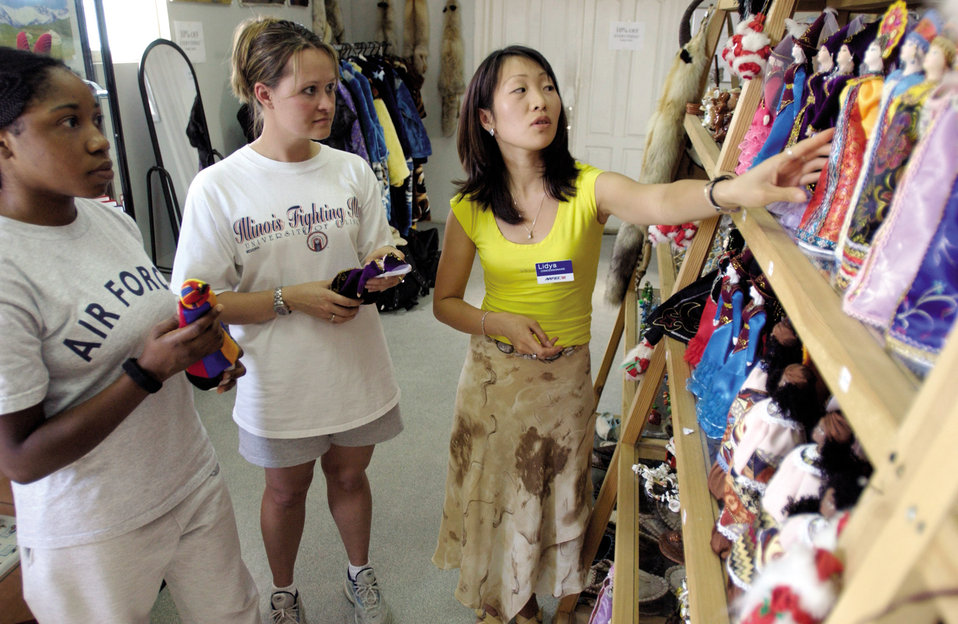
AAFES has been in every major conflict since World War I

MANAS AIR BASE, Kyrgyzstan -- AAFES volunteer Lidya Hyan shows Senior Airman Veronica Oliver and Staff Sgt. Genesia Angulo a collection of dolls sold by a local vendor here. The store is an AAFES-sponsored vendor that sells local crafts and artwork. It is one of many locally sponsored stores AAFES provides troops at locations around the world.